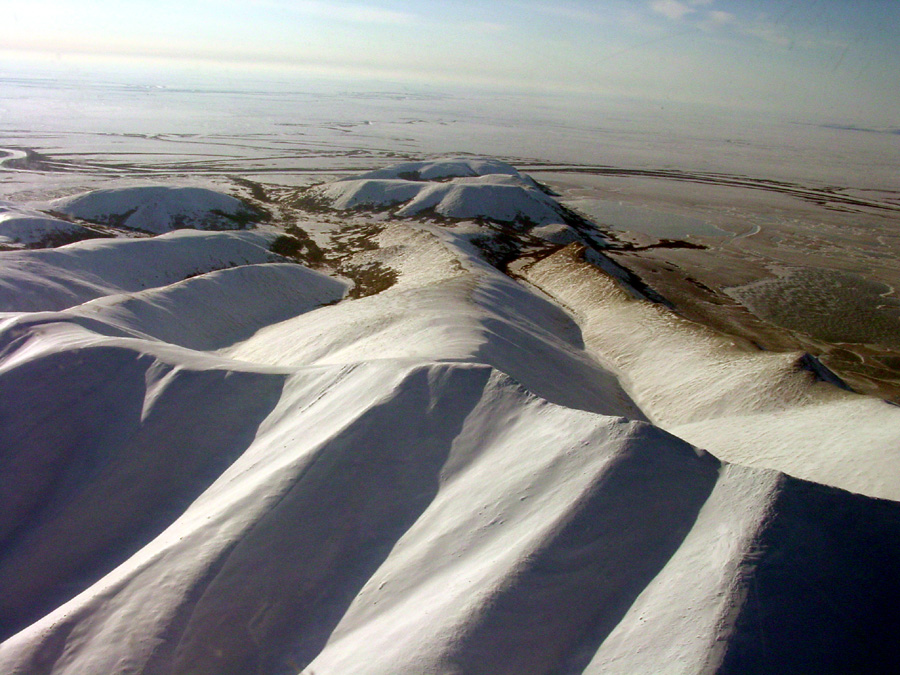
Kusilvak Mountains

USFWS Yukon Delta NWR